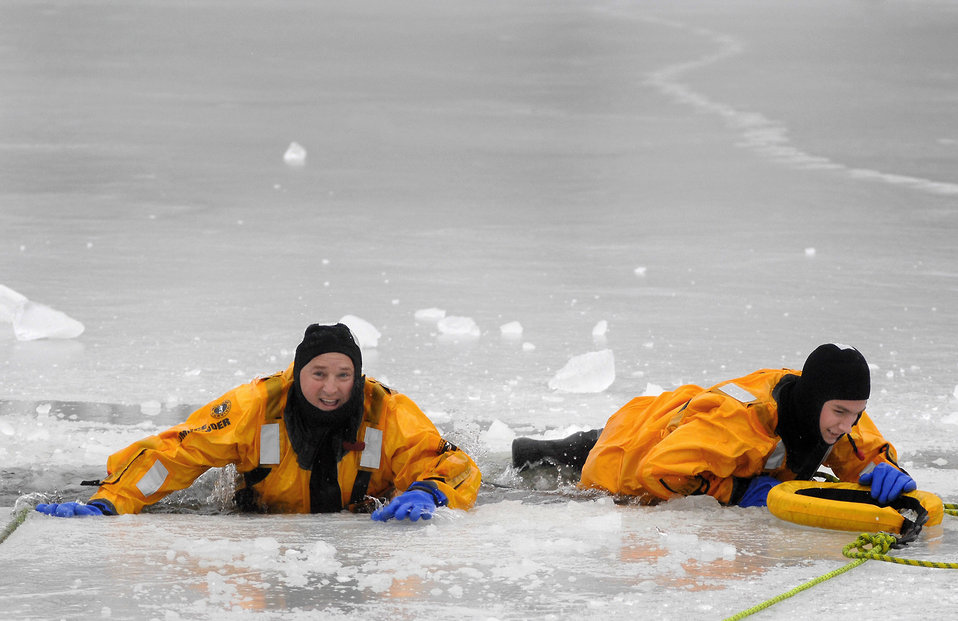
Ice rescue training

Two firemen from the 509th Civil Engineer Squadron participate in ice rescue training Jan. 31, 2011, at Whiteman Air Force Base, Mo.